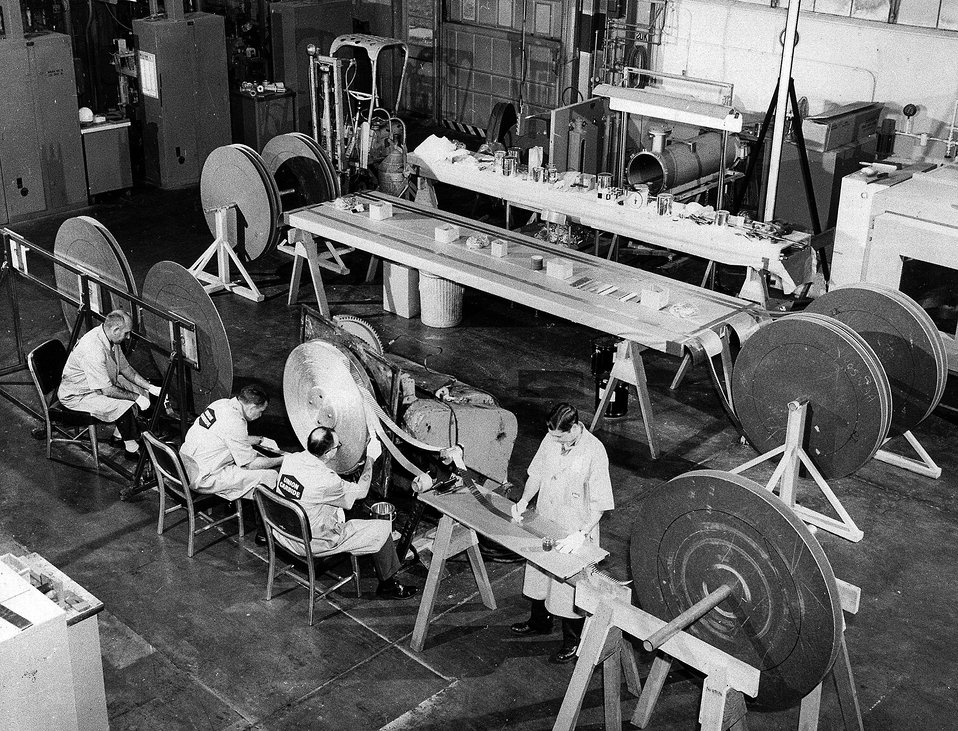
The technical skill and man-power of the AEC's Gaseous Diffusion Plant at Paducah, Kentucky, is being used to support research being conducted at the NASA Lewis Research Center, Cleveland, Ohio, in a study of magnetic fields of large volume and high field intensity. Circa 1968.